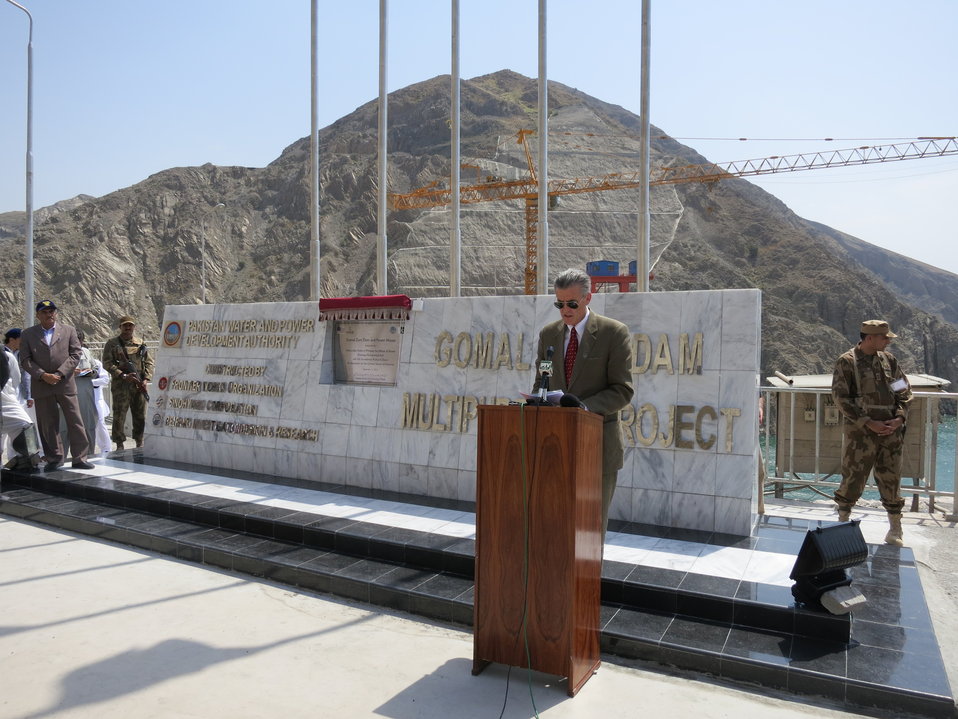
Gomal Zam- Sep 2013